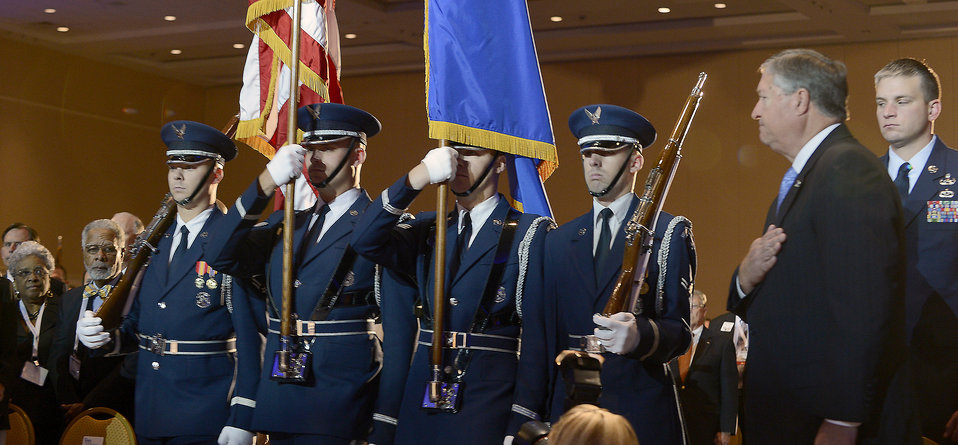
AFA conference kicks off

Honor guard members prepare to post the colors as Secretary of the Air Force Michael Donley looks on during the opening ceremony of the Air Force Association's Air and Space Conference and Technology Exposition in Washington, D.C., Sept. 17, 2012.